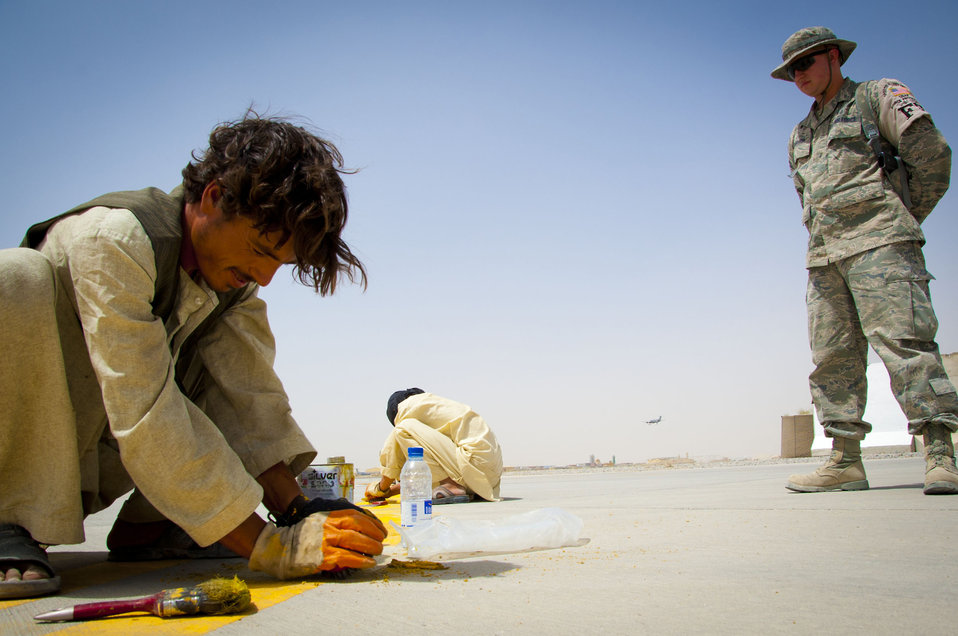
Ensuring a job well done...

Senior Airman Kenneth Henderson supervises Afghan workers July 28, 2011, at Kandahar Air Field, Afghanistan. Henderson is a force protection augmentee assigned to the 451st Expeditionary Civil Engineer Squadron.